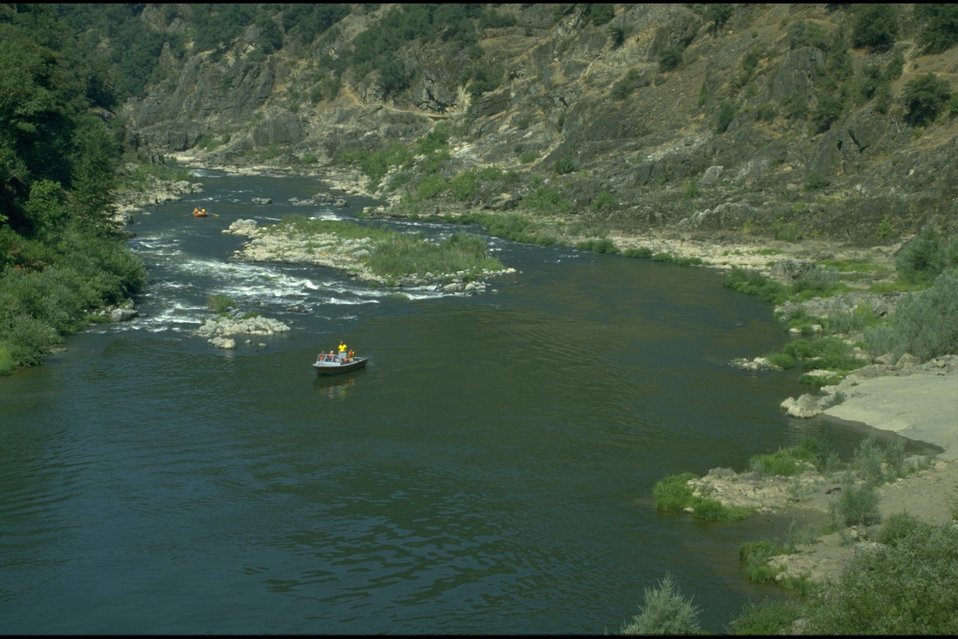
Hanten jetboat on top of Grave Creek rapid.